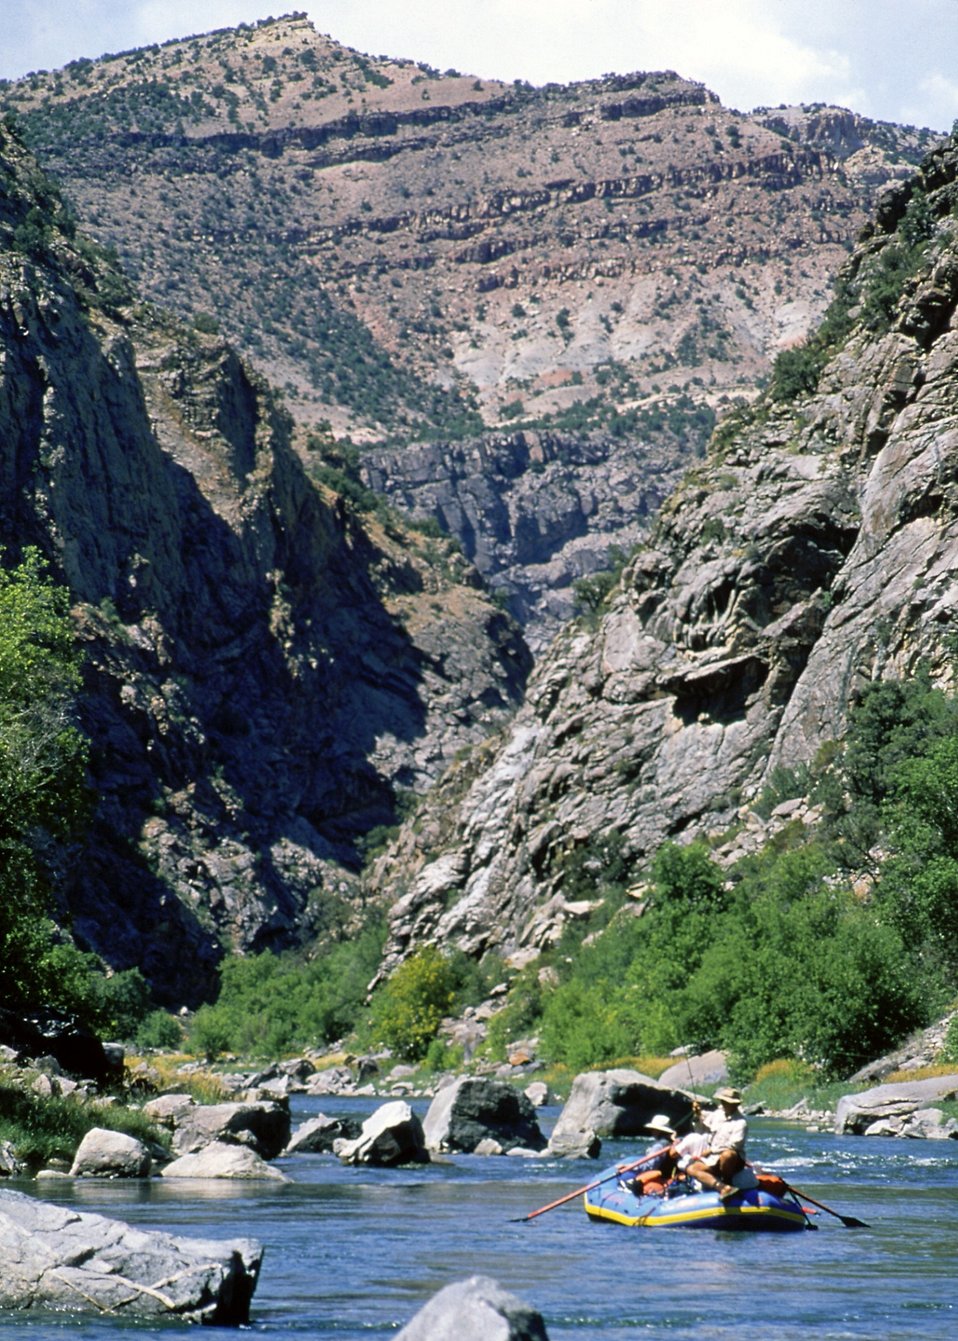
Rafflers fishing on river